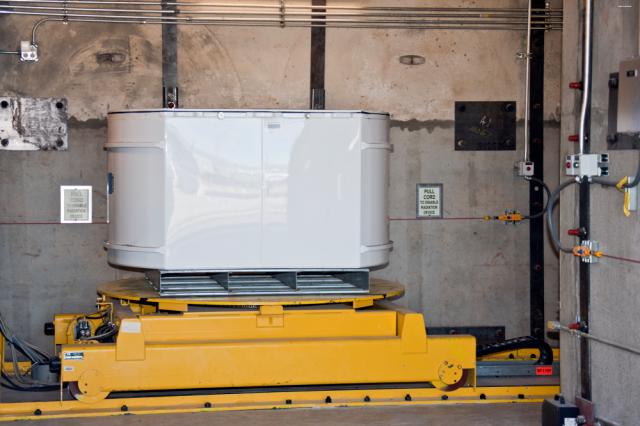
New Facility Aids in Lab’s Capability to Ship TRU Waste to WIPP

A standard waste box enters the HE-RTR at Los Alamos National Laboratory.

The High-Energy Real Time Radiography (HE-RTR) facility allows the LANL TRU Waste Program to x-ray waste drums that contain high-density items such as motors and pumps and larger containers known as standard waste boxes.